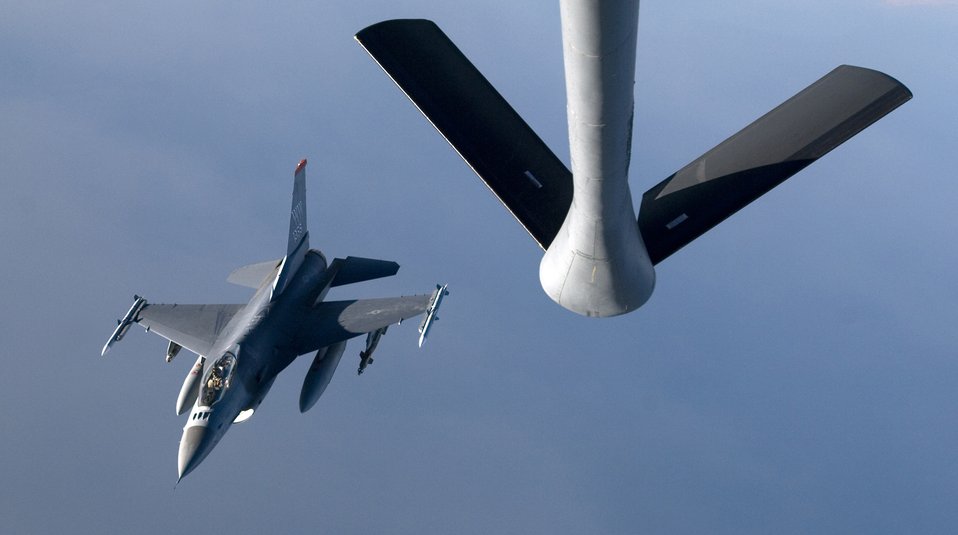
KC-135s keep them flying

A F-16 Fighting Falcon detaches from a KC-135 Stratotanker after refueling over Iraq in support of Operation Iraqi Freedom. On Jan. 29, U.S., French and Royal Air Force tankers flew 25 sorties and off-loaded almost 1.6 million pounds of fuel in support of OIF and Operation Enduring Freedom.